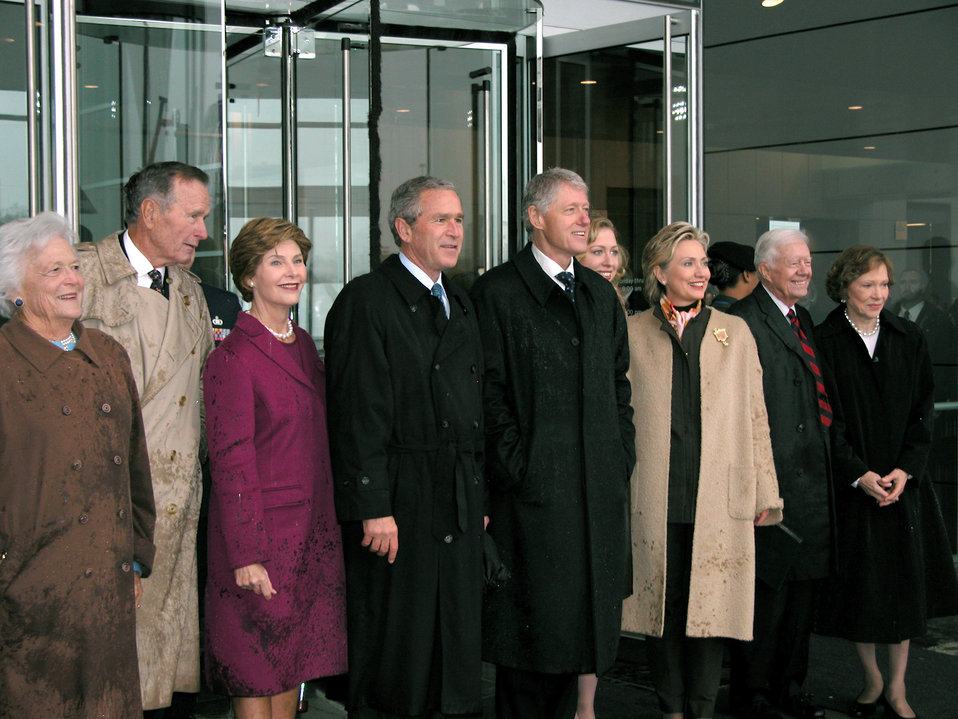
Air Force band performs at Clinton library opening

LITTLE ROCK, Ark. -- (From left) Barbara Bush, George H.W. Bush, Laura Bush, President George W. Bush, Bill Clinton, Chelsea Clinton, Hillary Clinton, Jimmy Carter and Rosalynn Carter pose for the media after the William J. Clinton Presidential Library opening ceremonies.